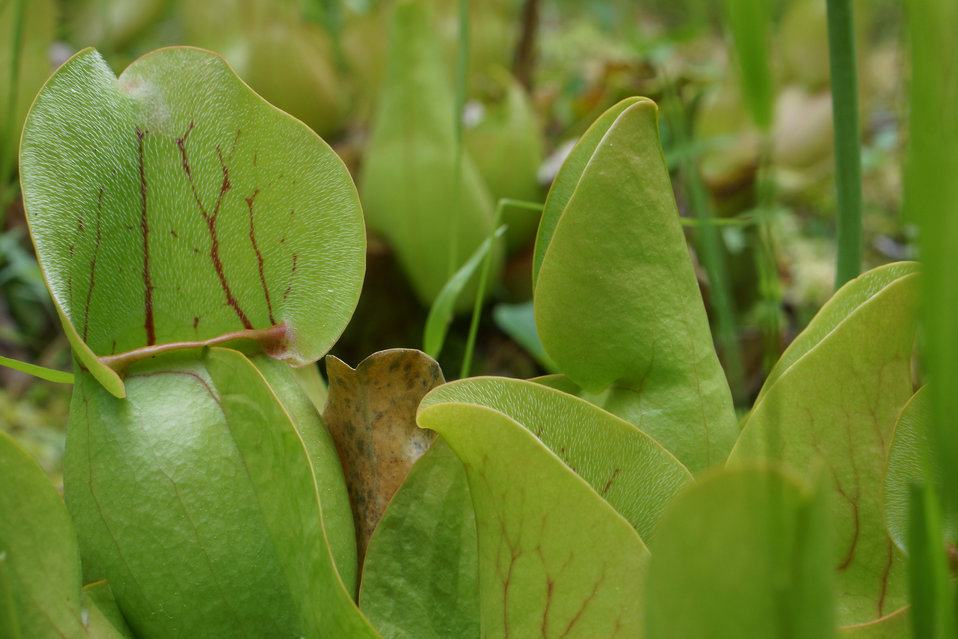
Mountain purple pitcher plants

In May, bog conservationists from Tennessee, North Carolina, and Georgia convened in the north Georgia mountains for the spring, 2014 meeting of the Bog Learning Network. The event provided an opportunity for biologists to see, first hand, the result of management efforts at two north Georgia bogs. More importantly, the outings provided an opportunity to share innovative approaches to bog management, such as the role of the Georgia Plant Conservation Alliance in conserving rare plants and coordinating a cadre of volunteers to work on bog management.

The Bog Learning Network was convened in the winter of 2013 as a way to bring together people working for bog conservation across the Southern Appalachians. Southern Appalachian bogs are one of North America’s rarest habitats and home to many rare plants and animals.